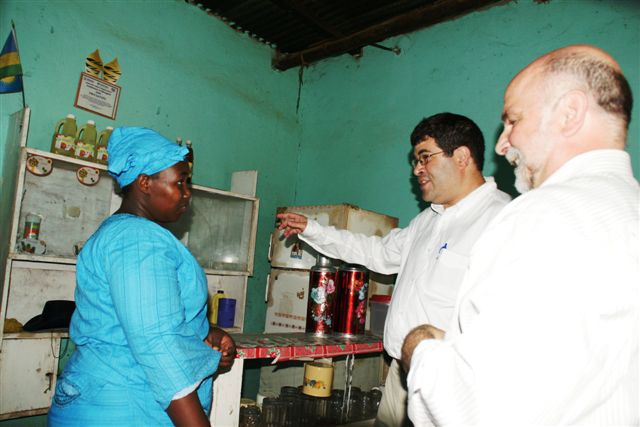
Deputy Secretary Neal Wolin’s trip to Africa 2009

Deputy Secretary Wolin visits a small dairy that produces Ikivuguto – a fermented milk drink that is widely consumed by the Rwandan population and is produced largely in the informal sector.